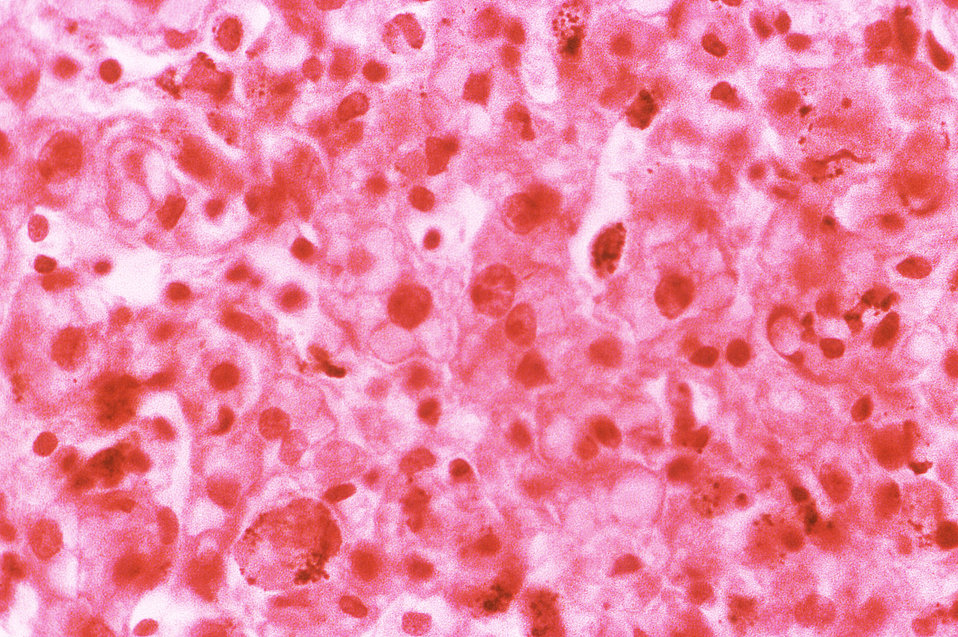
Under a high magnification of 400X, this hematoxylin-eosin-stained (H&E) photomicrograph depicts the cytoarchitectural changes found in a liver tissue specimen extracted from a deceased yellow fever patient. Note the 'typical fatty degeneration, and the presence of Kuppfer cells, some of which contained hemosiderin' granules. See PHIL 2176, and 8239, depicting TEMs of the yellow fever virus.